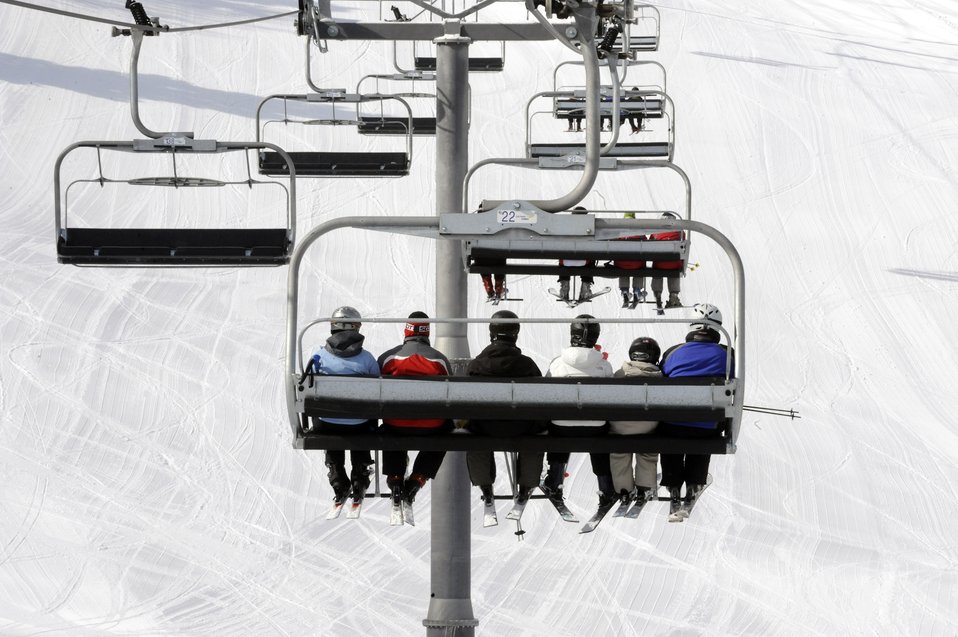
23rd National Disabled American Veterans Winter Sports Clinic

Veterans and people from all over the world ride the ski lift to Sam's Knob Mar. 31 during the 23rd National Disabled American Veterans Winter Sports Clinic in Snowmass Village, Colo.